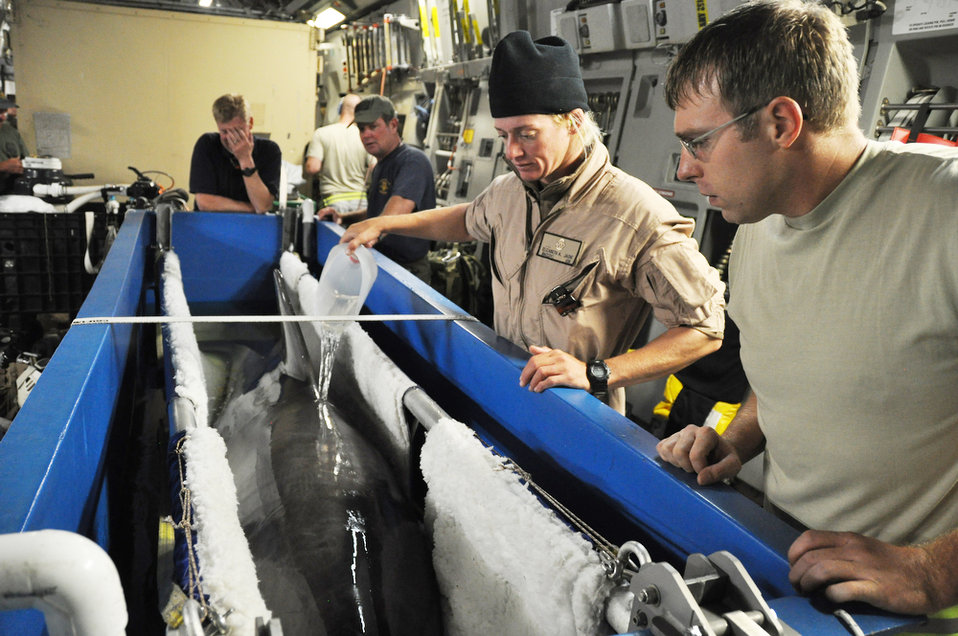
Dolphins fly to New Caledonia with Hickam C-17 crew

Staff Sgt. Ray Nealon watches as Navy Petty Officer 2nd Class Elizabeth Jache pours water on her dolphin to keep him cool prior to transporting him from a C-17 Globemaster from March Air Reserve Base, Calif., to a C-17 from Hickam AFB, Hawaii, Nov. 8, 2009. Petty Officer Jache is one of the primary dolphin handlers in the Navy Marine Mammal Program based in San Diego. The Air Force active duty and Reserve C-17 aircrews transported four dolphins from the mammal program to Noumea, New Caledonia, where they will participate in Lagoon Minex 2009, which is a humanitarian project where U.S. Navy, French, Australian and New Zealand demolition crews will remove mines left over from World War II from the surrounding water of the area. Sergeant Nealon is assigned to the 735th Air Mobility Squadron at Hickam AFB. He is a native of Wilkes-Barre, Pa.